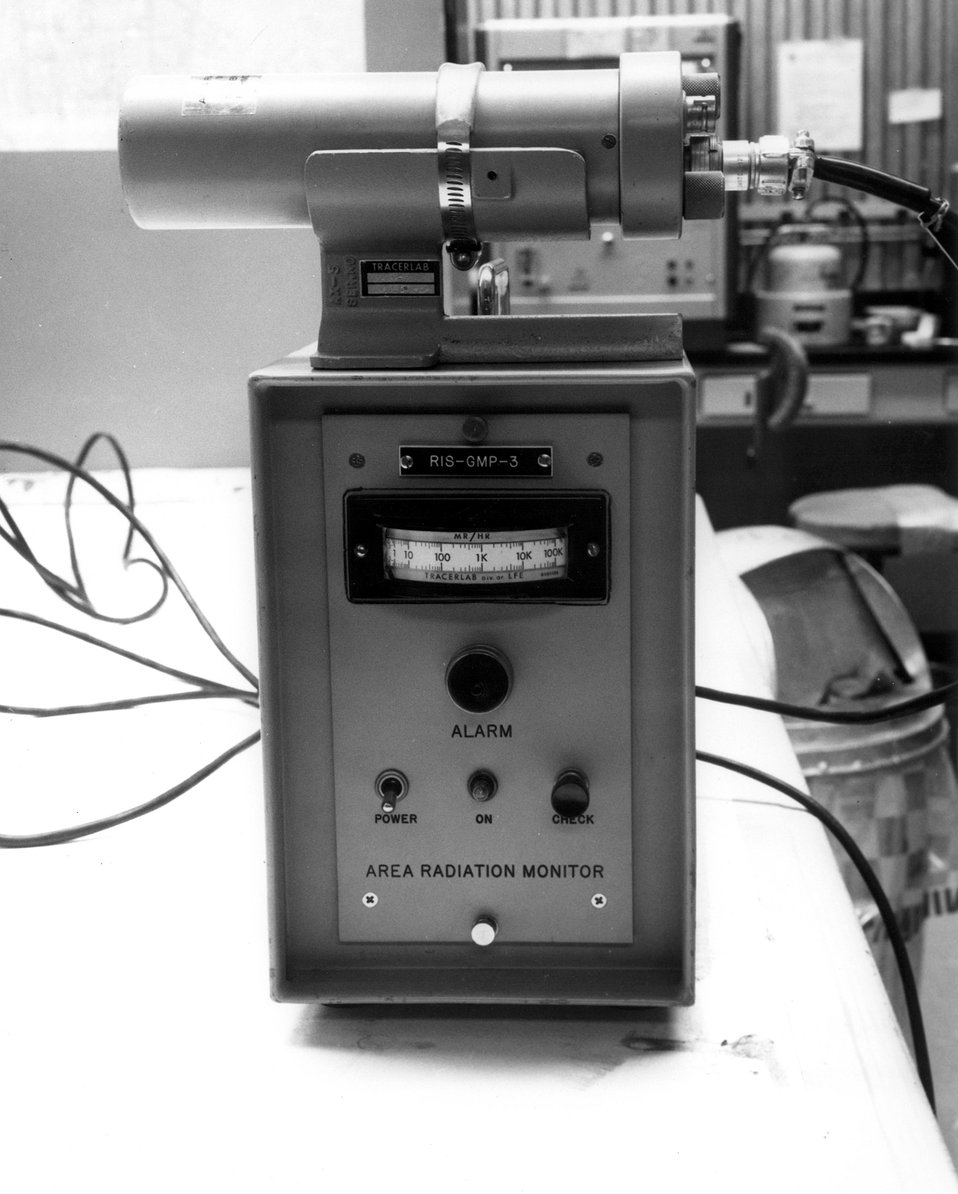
A portable, remote radiation area monitor at the Atomic Energy Commission's National Reactor Testing Station in Idaho. Circa 1974.